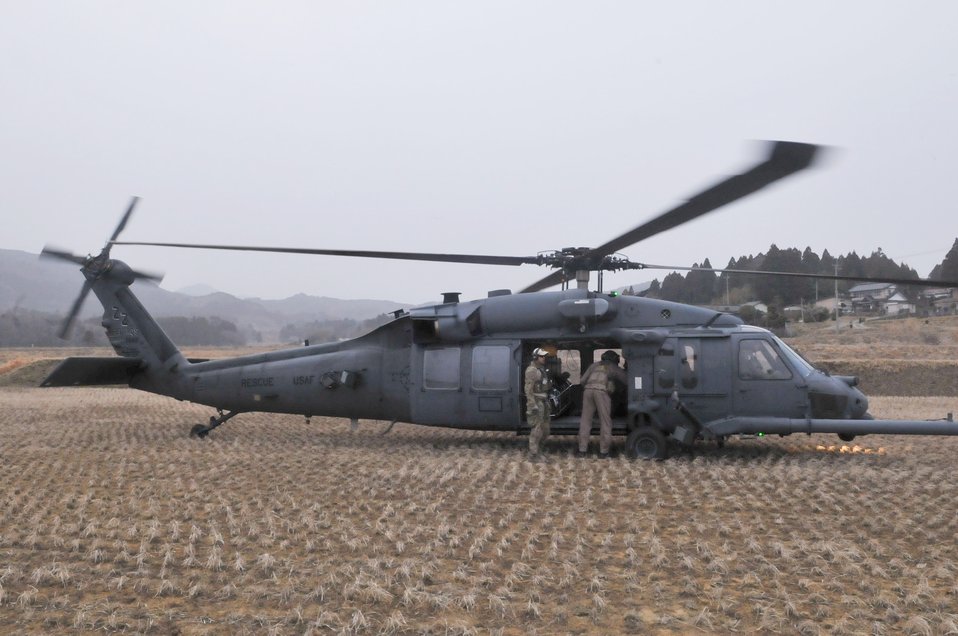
Supporting Operation Tomodachi

Two Airmen load medical supplies into an HH-60 Pave Hawk prior to takeoff March 20, 2011, at Yokota Air Base, Japan.